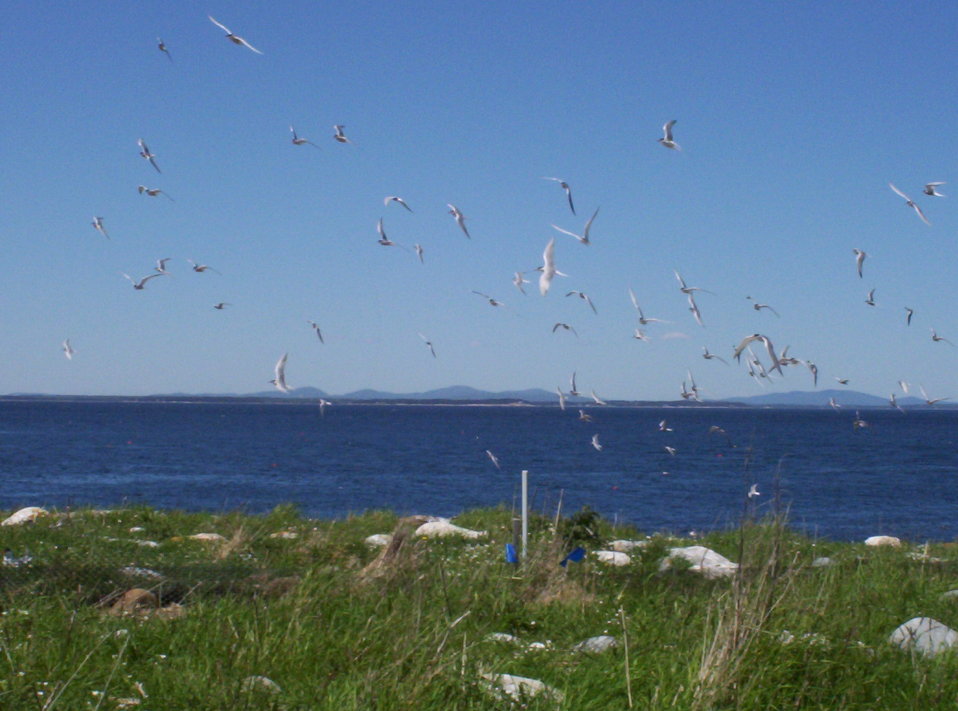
Terns flying over the grass

Terns at Maine Coastal Island National Wildlife Refuge